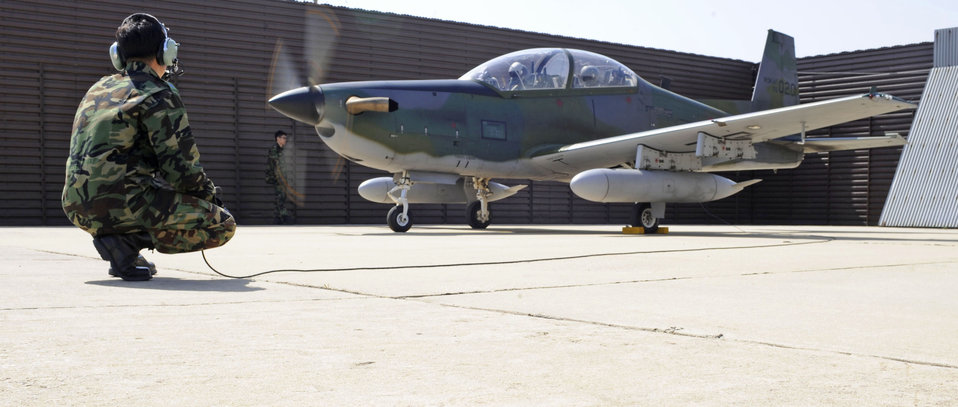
?Buddy Wing? wraps up at Osan

South Korean air force Maj. Jwa-Ryong Park prepares to take off in his KA-1 aircraft April 15, 2010, at Osan Air Base, South Korea. Major Park is the 237th Tactical Fighter Squadron intelligence commander.